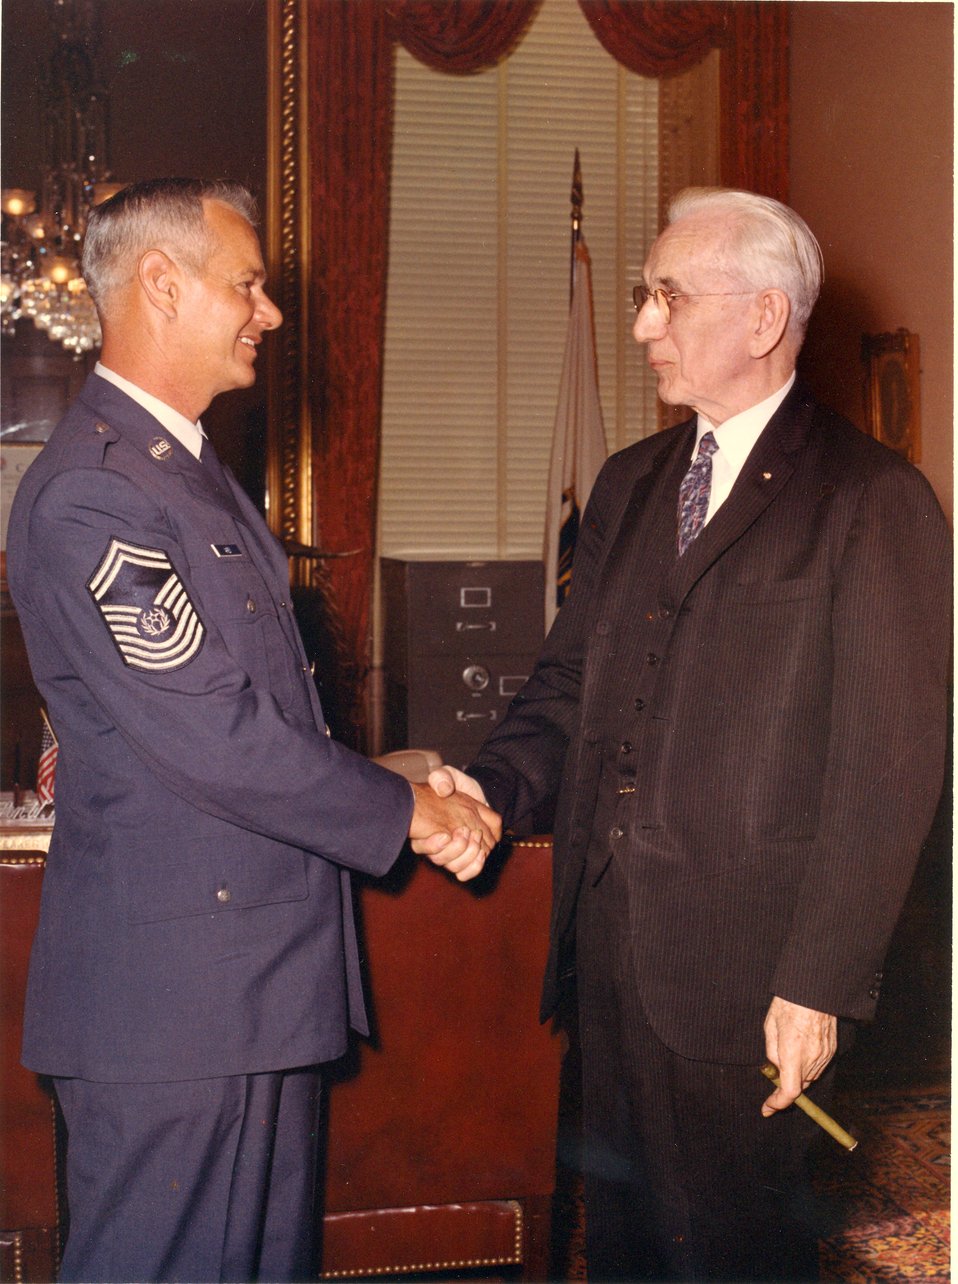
Enlisted perspective remembers the 'first'

Chief Master Sgt. Paul Airey, being congratulated by Massachusetts Congressman John W. McCormack, was selected as the first chief master sergeant of the Air Force on April 3, 1967. During his tenure he visited many bases and talked with many Airmen about improving conditions for the enlisted force.